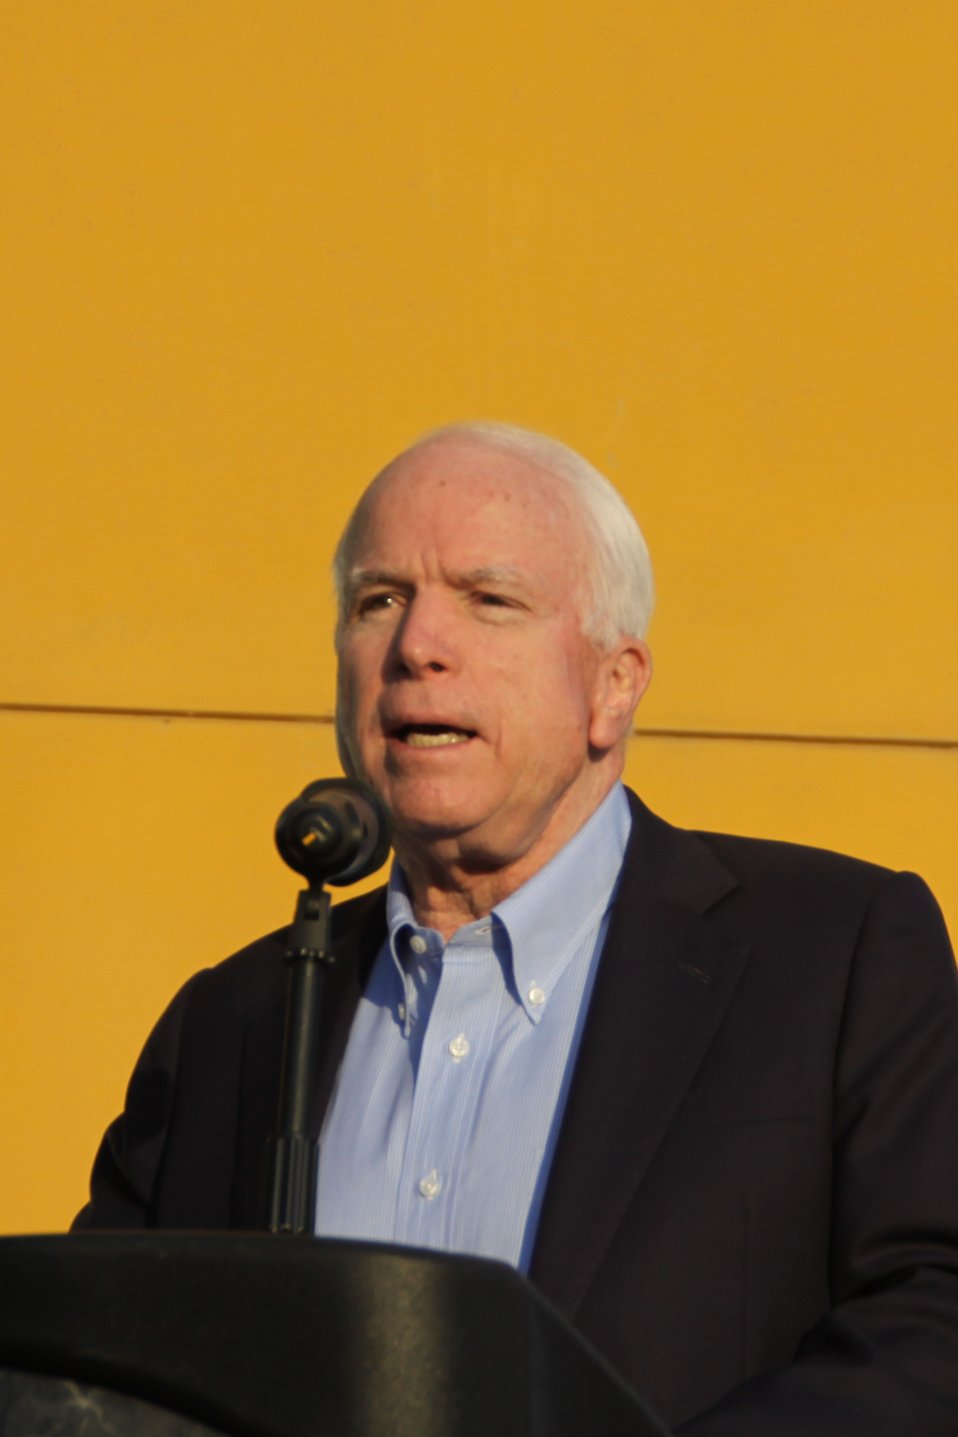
Senator McCain